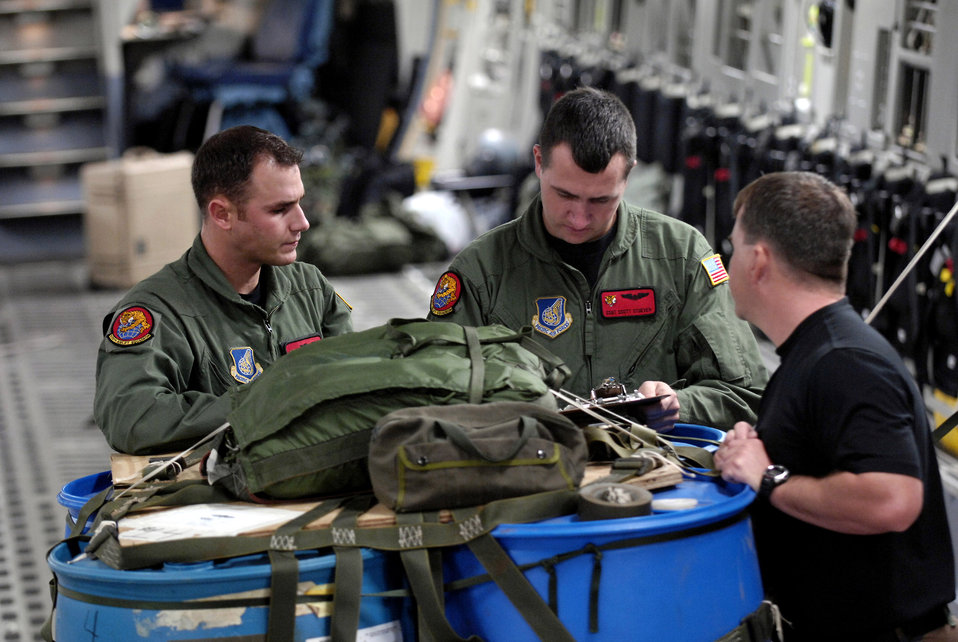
Hickam's C-17s deliver anywhere

Staff Sgts. Ryan Boehm, Scott Stueven and Allen Culbreth go over a joint airdrop inspection form on a C-17 Globemaster III Jan. 7 at Hickam Air Force Base, Hawaii. The 535th Airlift Squadron Airmen are participating in a local two-ship airdrop training mission as part of their currency training.